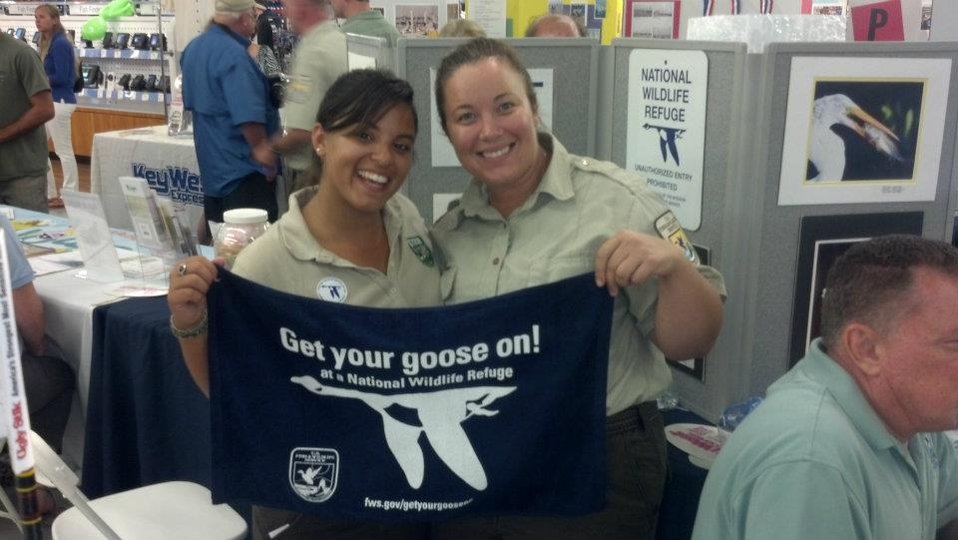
Get Your Goose On!